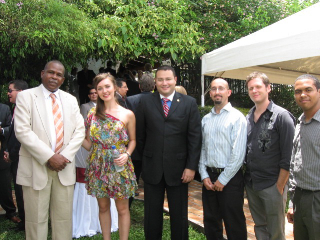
July 4th Celebration at U.S. Embassy in Honduras

The New Orleans-based Sasha Masakowki Quartet, Honduras Minister of Culture Bernard Martinez, and Honduras Minister of Communications Miguel Angel Bonilla pose for a photo at the U.S. Independence Day celebration at the U.S. Ambassador to Honduras’ residence in Tegucigalpa, Honduras, on July 2, 2010.